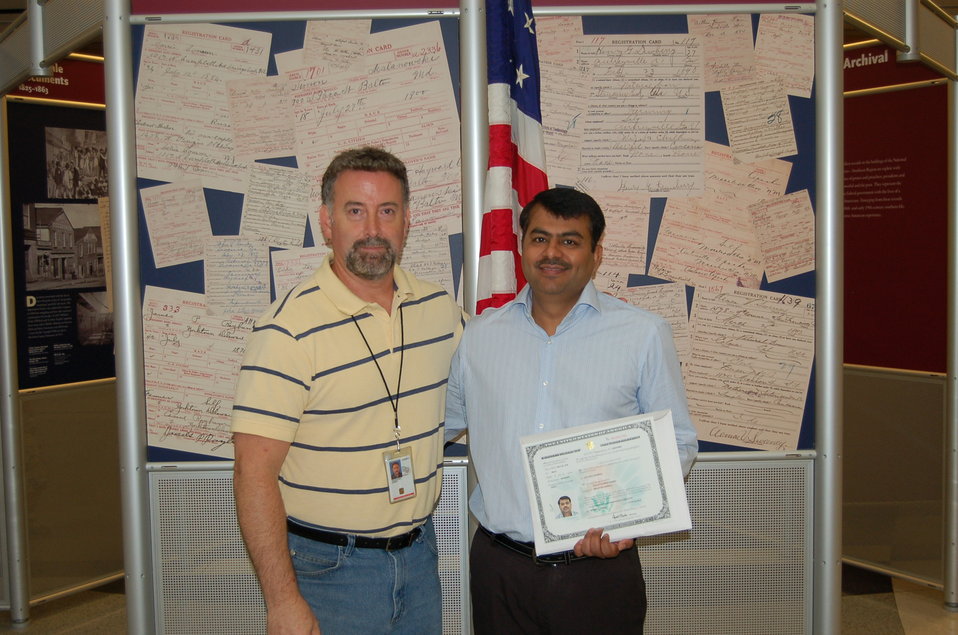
New Citizens